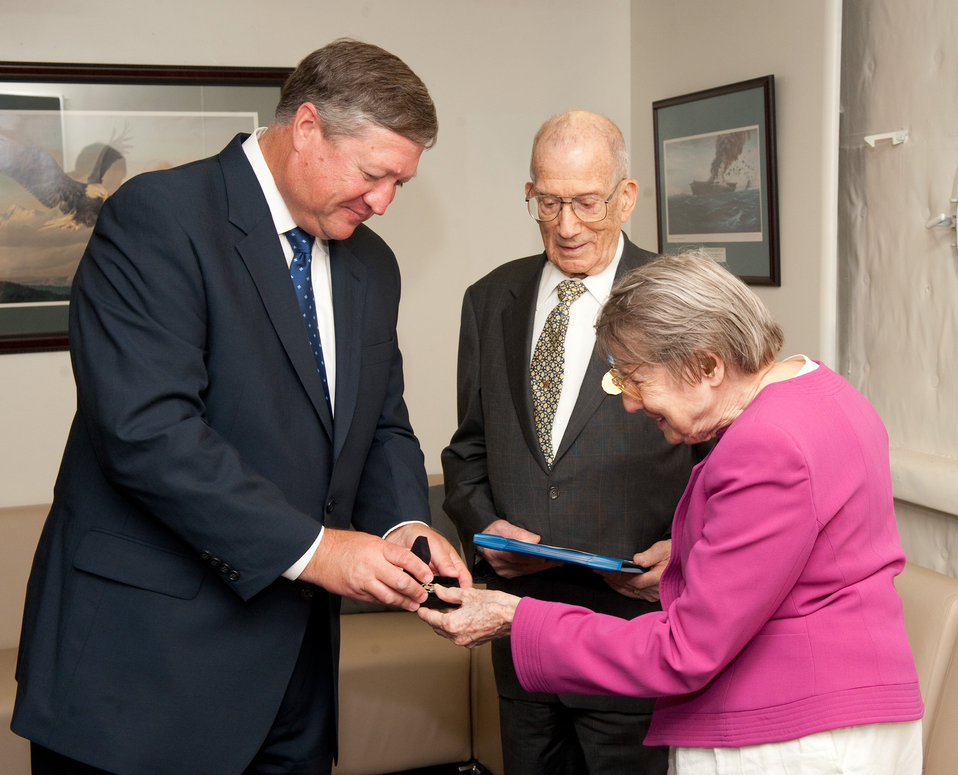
Air Force Week New York City Public Service Award

The Honorable Michael Donley (left), Secretary of the Air Force, presented Elizabeth Burger (right) a gift of appreciation for her support of her husband Chester Burger's (center) more than 15 years of advocacy to educate members of NYC on the contributions of America's service members, after the Air Force Week New York City proclamation ceremony at the USS Intrepid on Aug. 24, 2010. The event was highlighted by a six-ship flyover by the USAF Thunderbirds. The Honorable Michael Donley, Secretary of the Air Force attended, along with General Raymond Johns, Commander of Air Mobility Command. The Police Commissioner of the City of New York, the Honorable Raymond Kelly, represented NYC. Mr. Greg Kelly of